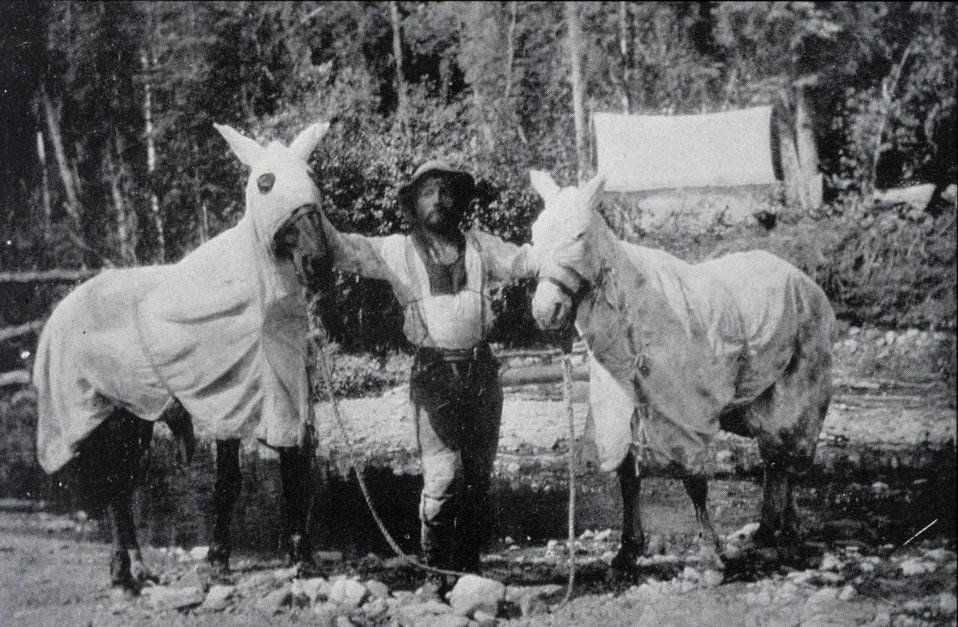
Horses and man covered for mosquitoes. 141st Meridian Survey.